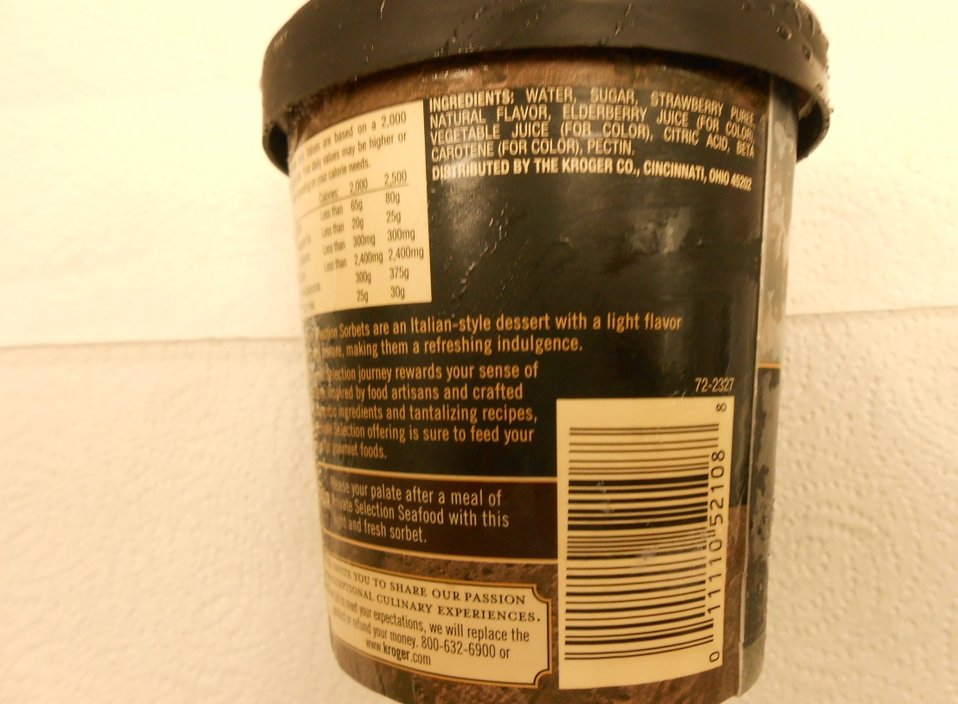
RECALLED - Strawberry Sorbet

April 12, 2014 - Product Recall - Private Selection Sweet Strawberry Sorbet Recalled for Undeclared Allergen.